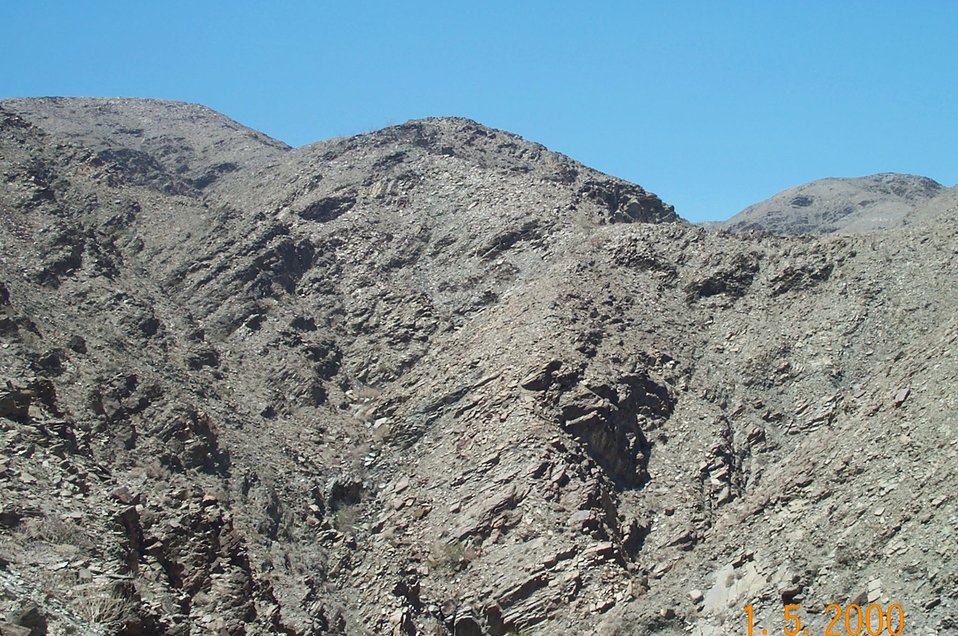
Big horn sheep habitat